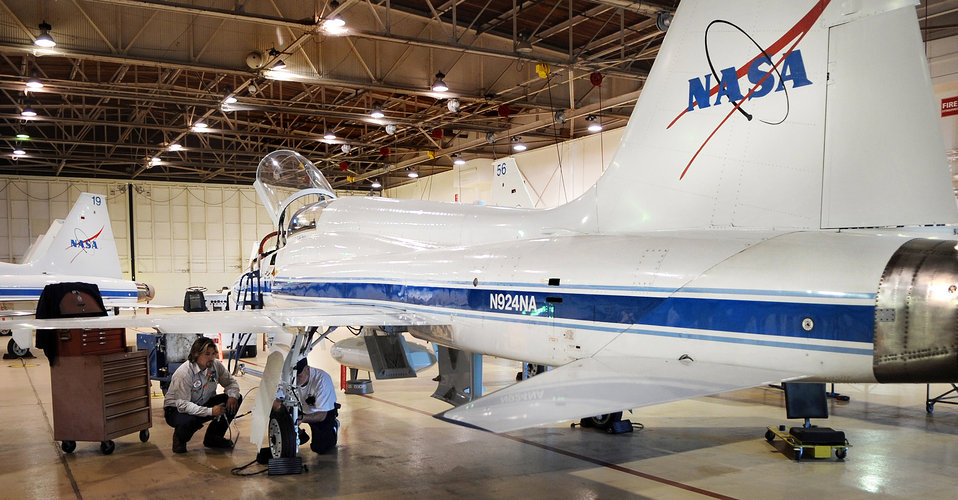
NASA trains pilots to fly high

Jesse Perez and Mike Parrott perform a routine brake check on a NASA T-38 Dec. 2 in Ellington Field, Texas. Mr. Perez is an avionics technician and Mr. Parrott is an unscheduled maintenance crew leader for NASA.